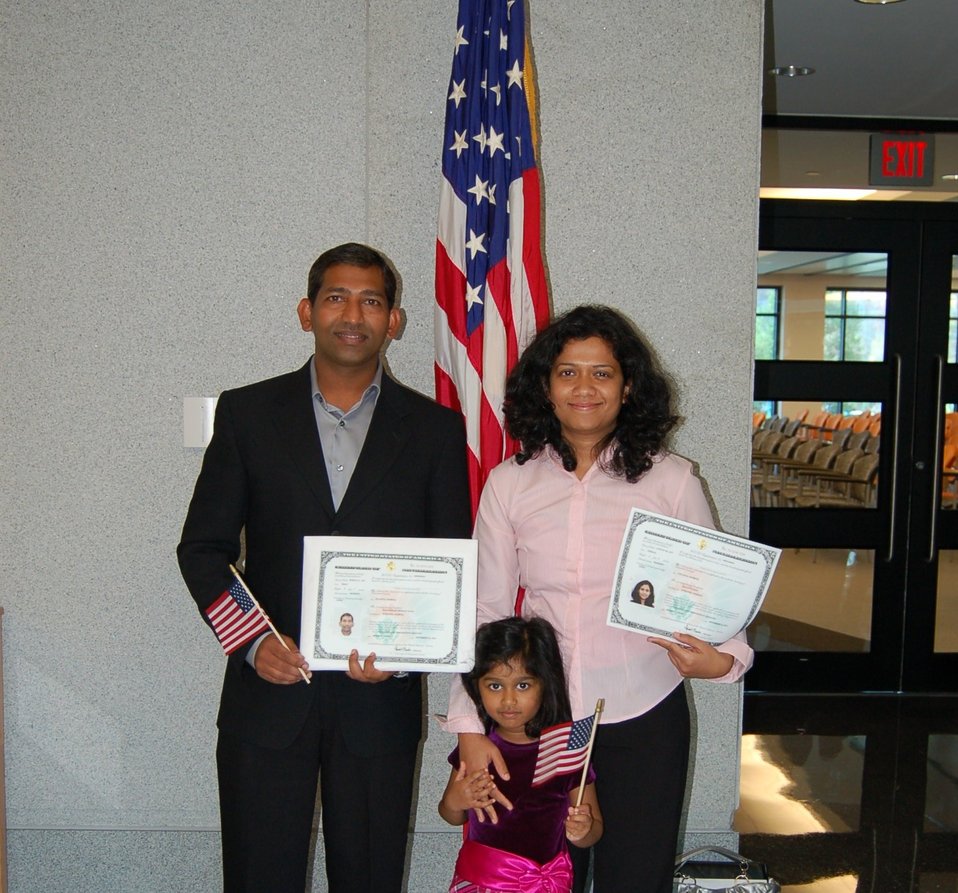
New Citizens